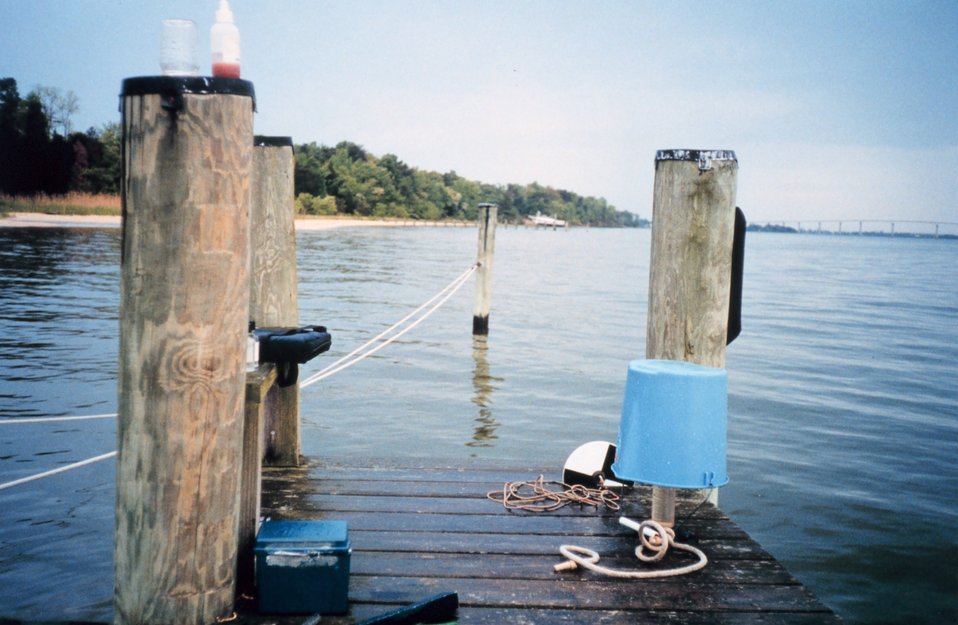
Water quality testing equipment.